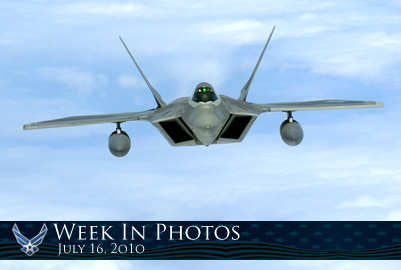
Air Force Week in Photos for July 16, 2010, highlights photos from around the Air Force. In this photo by Senior Airman Gustavo Gonzalez, an F-22 Raptor flies over the Pacific Ocean July 2, 2010, on its way to its new home at Joint Base Pearl Harbor-Hickam, Hawaii.